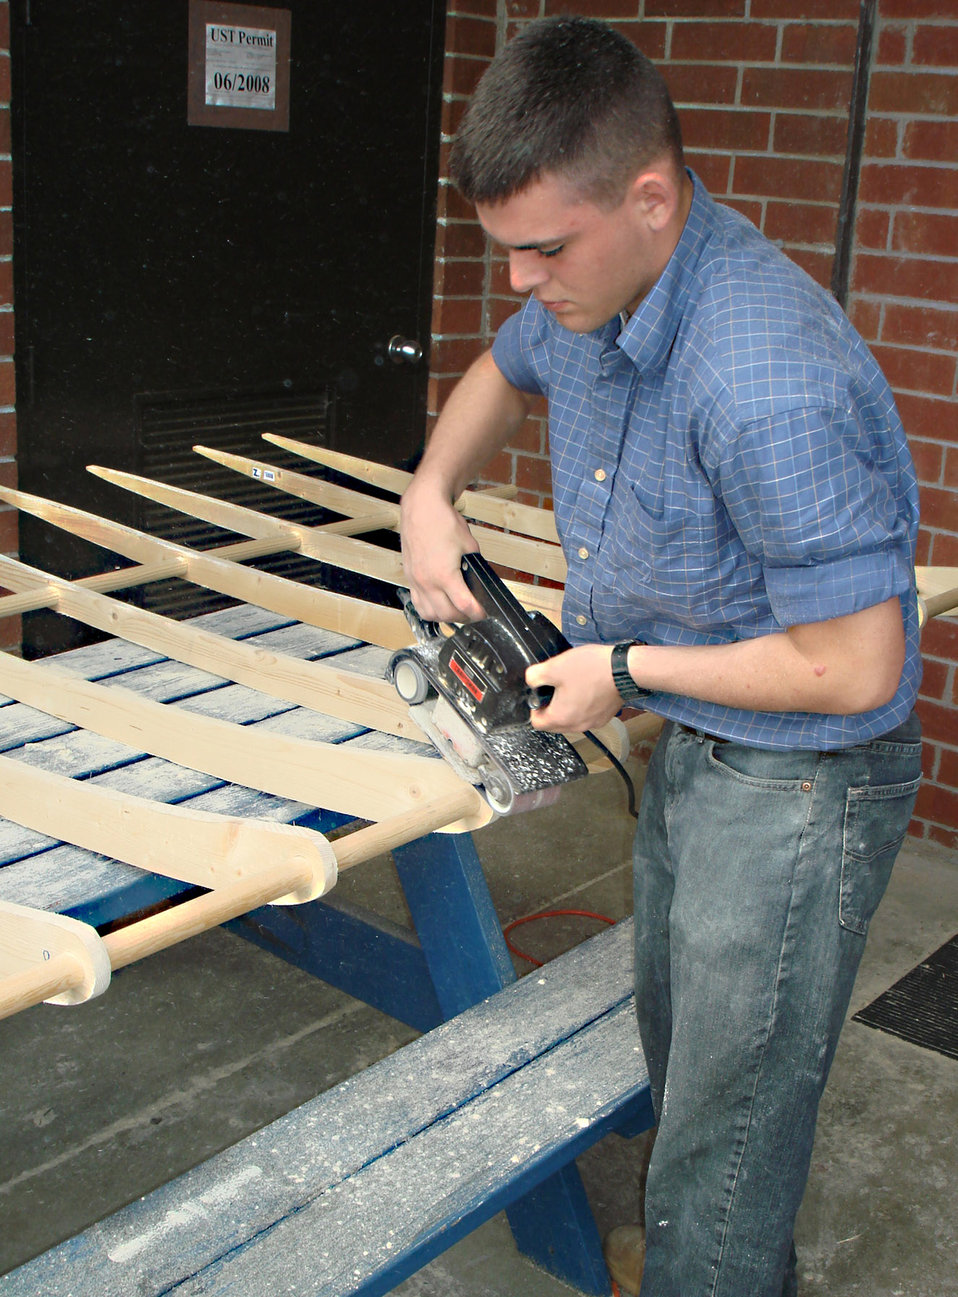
Junior ROTC cadets revisit history, build Wright Flyer replica

An Air Force Junior ROTC cadet from SouthWest Edgecombe High School, N.C., dedicated more than a year of planning and building to construct a replica of the Wright Flyer in December 2008 after visiting the Wright Brothers' memorial in Kitty Hawk, N.C. The unit was granted a Bright Ideas Grant worth $483, and raised an additional $2,000 toward the project through fundraisers.